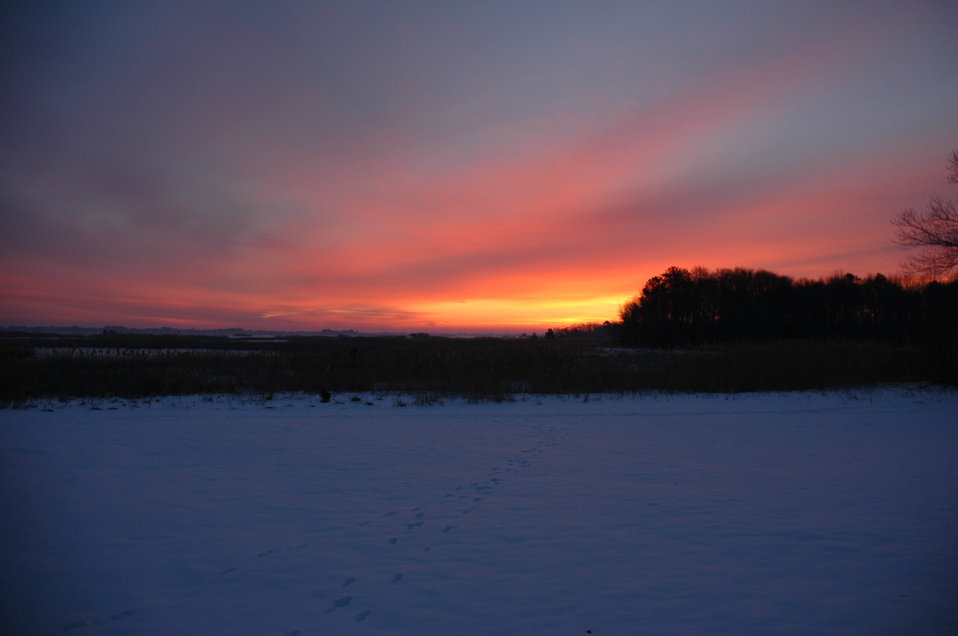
Photo of the Week - Sunrise at Prime Hook National Wildlife Refuge (DE)

Photo of the week - 2/23/10

Sunrise at Prime Hook National Wildlife Refuge in Delaware.